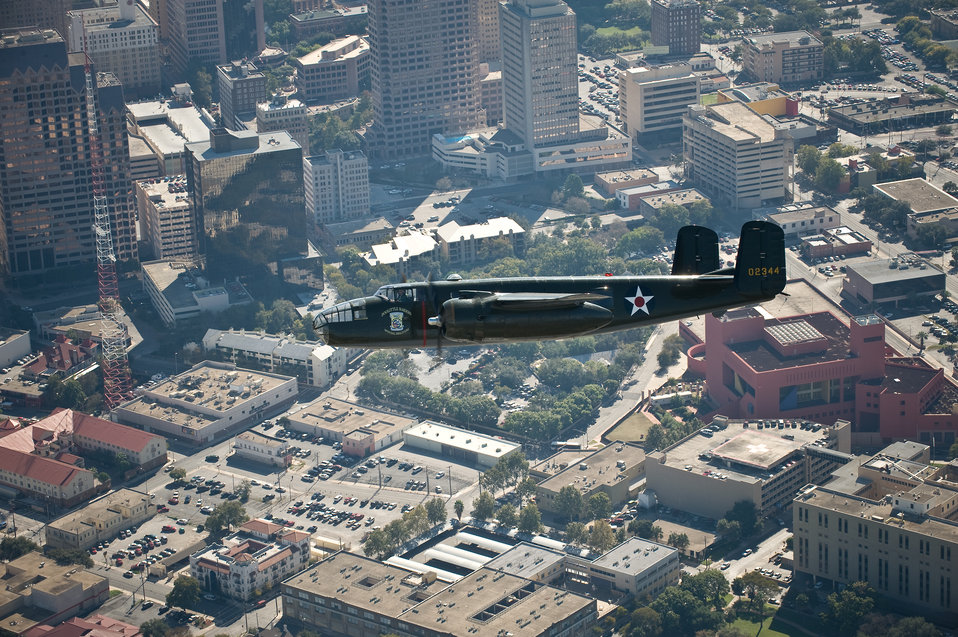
Warrior Flight